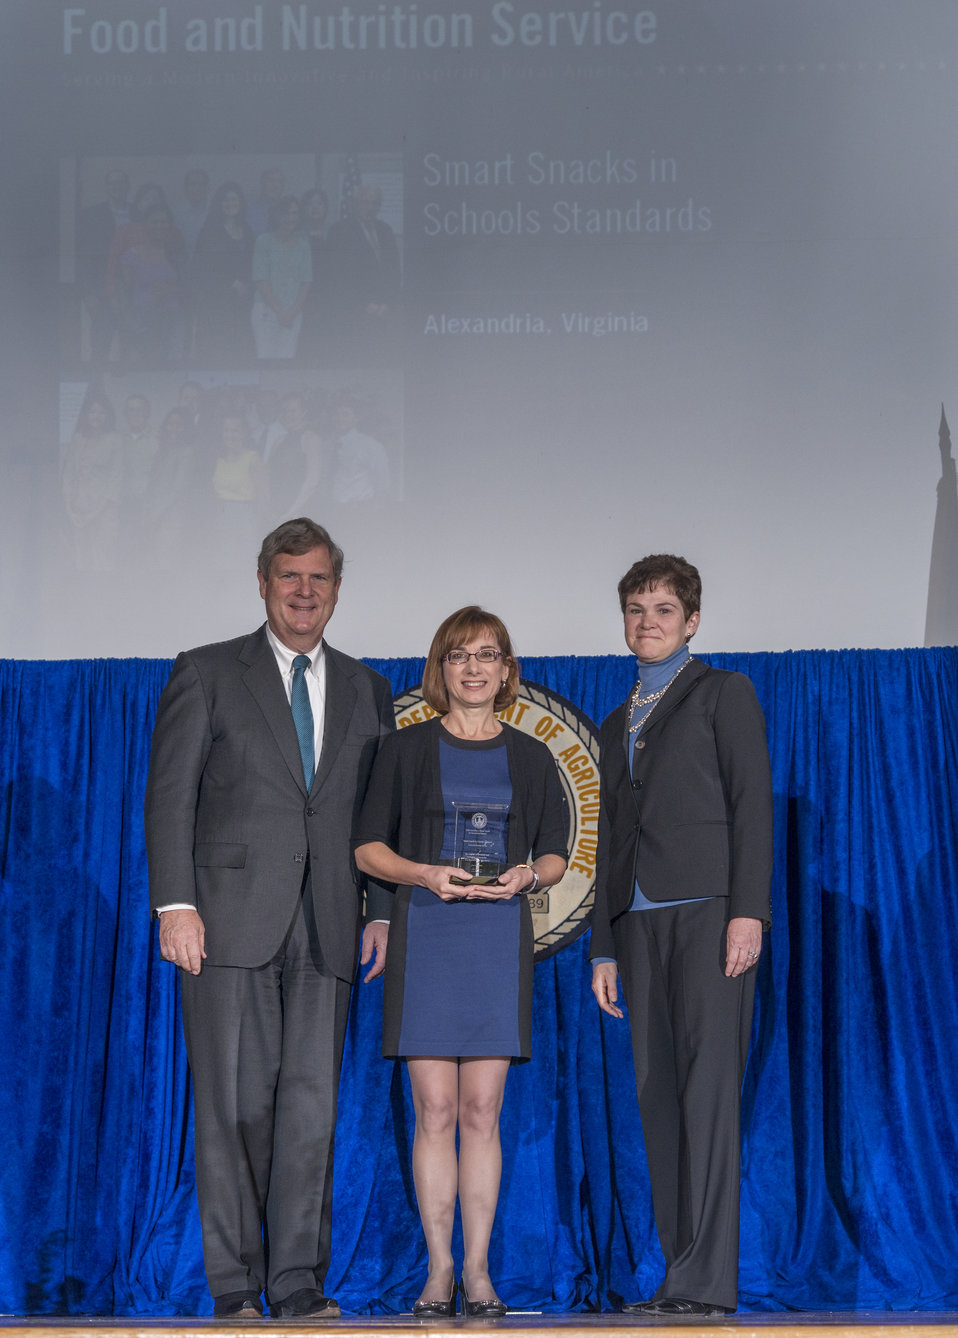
Agriculture Secretary Tom Vilsack and Agriculture Deputy Secretary Krysta Harden present the Secretary’s Honor Award to Smart Snacks in Schools Standards, Food and Nutrition Service, in Alexandria, VA Group leader Cynthia Long for extraordinary efforts for the timely publication of the Smart Snacks in School Standards Cynthia Long, Group Leader at the 2013 Secretary's Honor Awards in the Jefferson Auditorium at the U.S. Department of Agriculture in Washington, D.C. on Wednesday, Dec. 11, 2013.